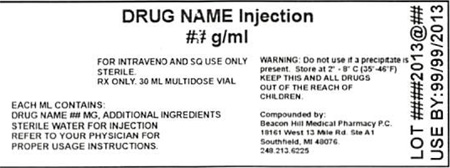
RECALLED – Sterile Injectable

July 31, 2013 – Product Recall – Beacon Hill Pharmacy d/b/a Rxtra Solutions Issues Voluntary Nationwide Recall of Certain Sterile Products Due to a Question of Sterility Assurance.